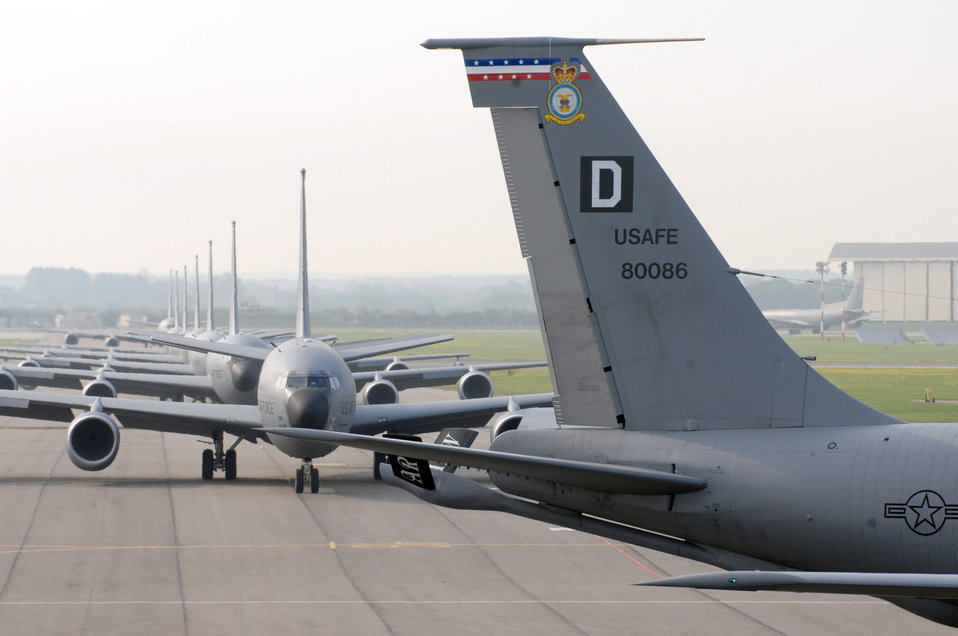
Stick 'em up: Corrosion control shop develops decals for rapid recognition

The tail of 100th Air Refueling Wing KC-135 Stratotankers bear unique markings making them immediately identifiable from other Stratotankers. The Box D and base shield are each 48 inches tall, and are created by Airmen at the corrosion control shop.